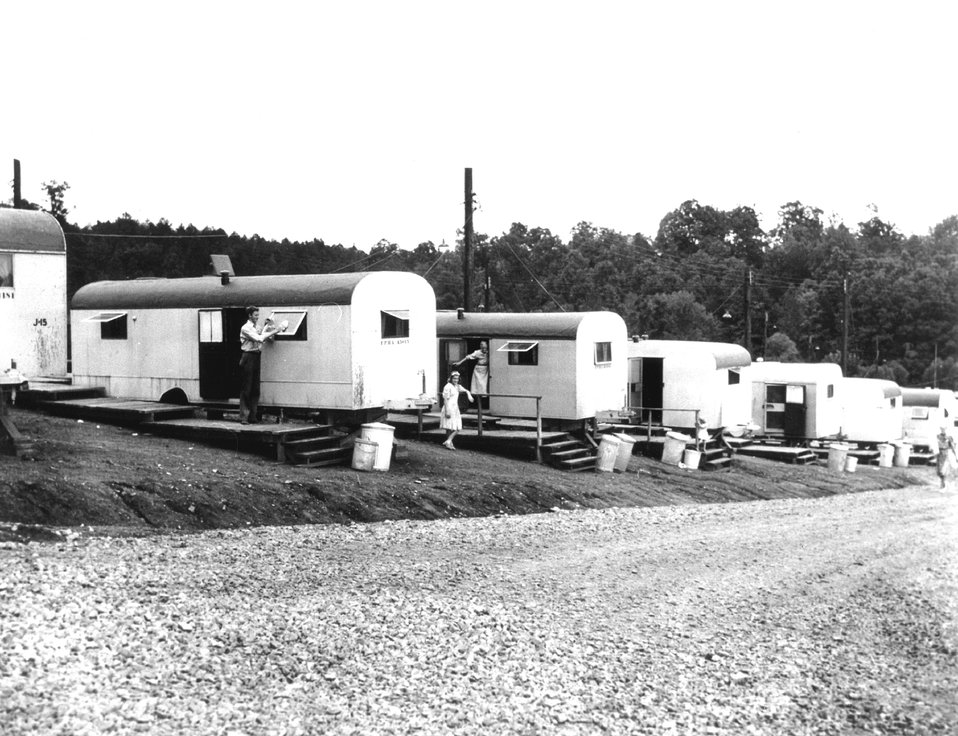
MED Trailer Area - Oak Ridge. c. undated